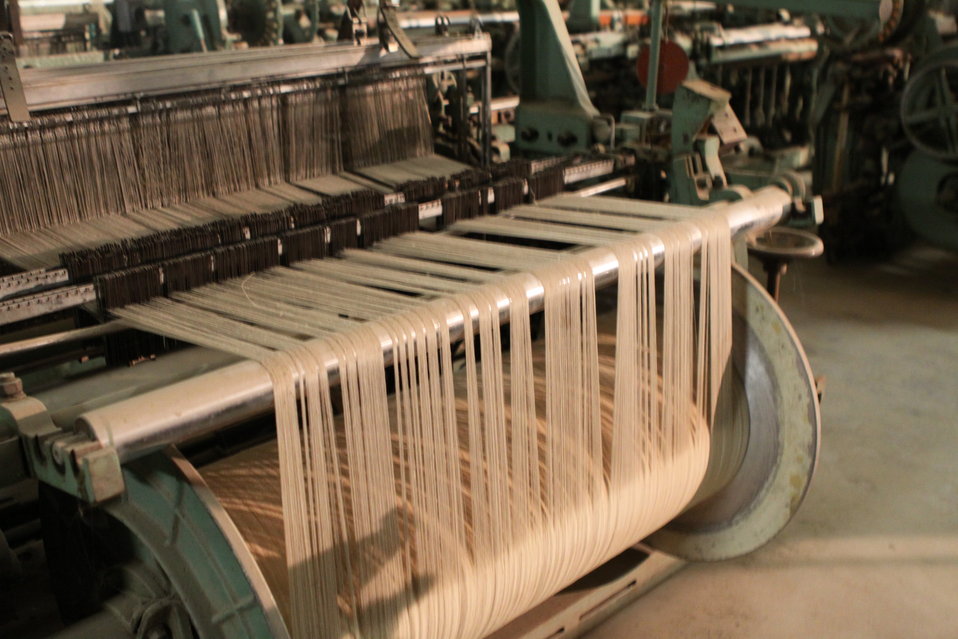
100525 Hirat Textile Company 737